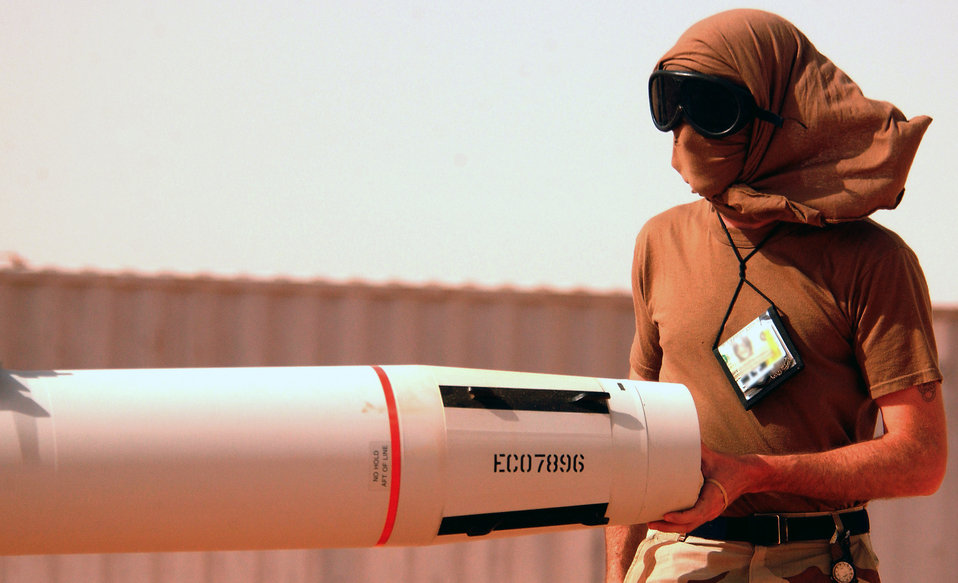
Nipp

OPERATION IRAQI FREEDOM -- Staff Sgt. Jason Nipp protects himself during a sand storm while installing fins on a missile at a forward-deployed air base supporting Operation Iraqi Freedom. Nipp, a munitions specialist with the 363rd Expeditionary Equipment Maintenance Squadron, and other munitions troops supporting Operation Iraqi Freedom are working around the clock to build munitions to keep the coalition air campaign going.